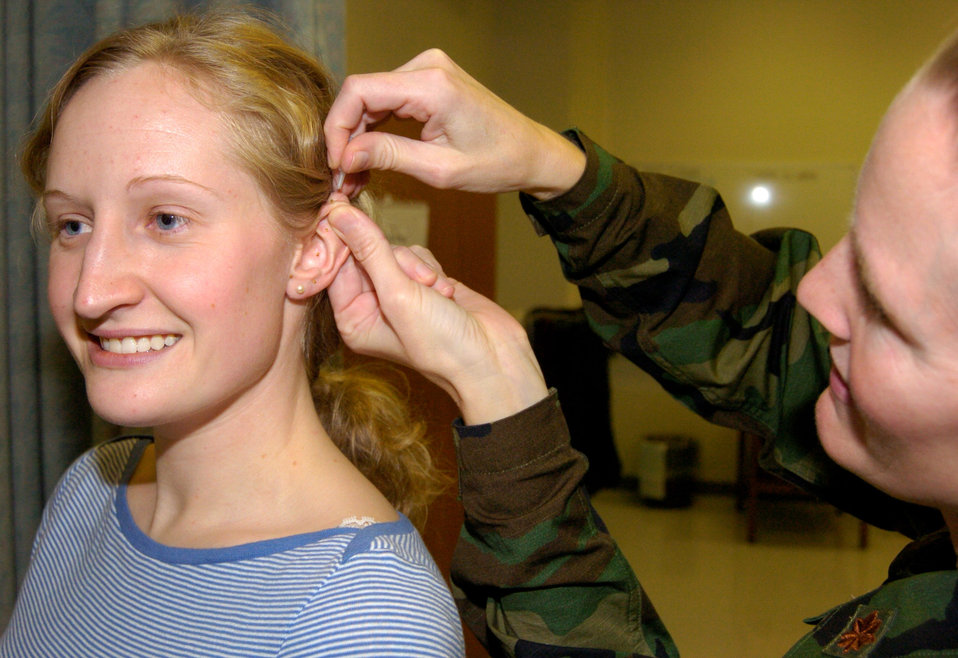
Battlefield acupuncture introduced at Landstuhl

Maj. (Dr.) Teri Simpson applies a small golden stud to the ear of Senior Airman Jillian Sandbothe whose severe headaches resulting from an auto accident where relieved through acupuncture at Landstuhl Regional Medical Center in Germany.